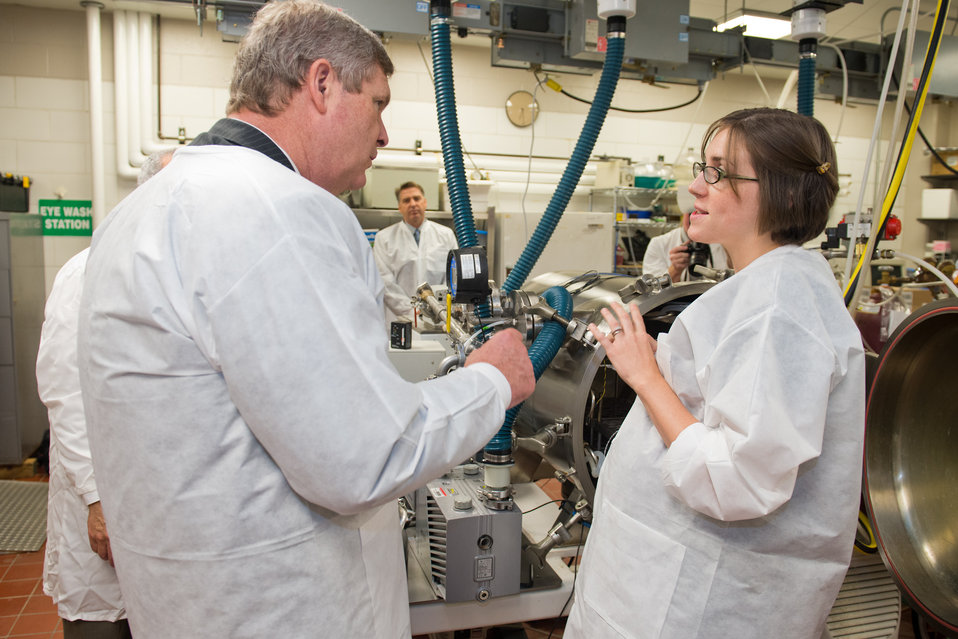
U.S. Department of Agriculture Secretary Tom Vilsack's touring the Parker Food Science and Technology building at The Ohio State University in Columbus, Ohio, on Thursday, June 28, 2012. During the tour He was given presentations by faculty and students. The first presentation was on a technique that was being developed to help better rid eggs of salmonella. The final presentation showed new food products such as candies, breads and juices that could better help provide essential vitamins and nutrients to consumers.